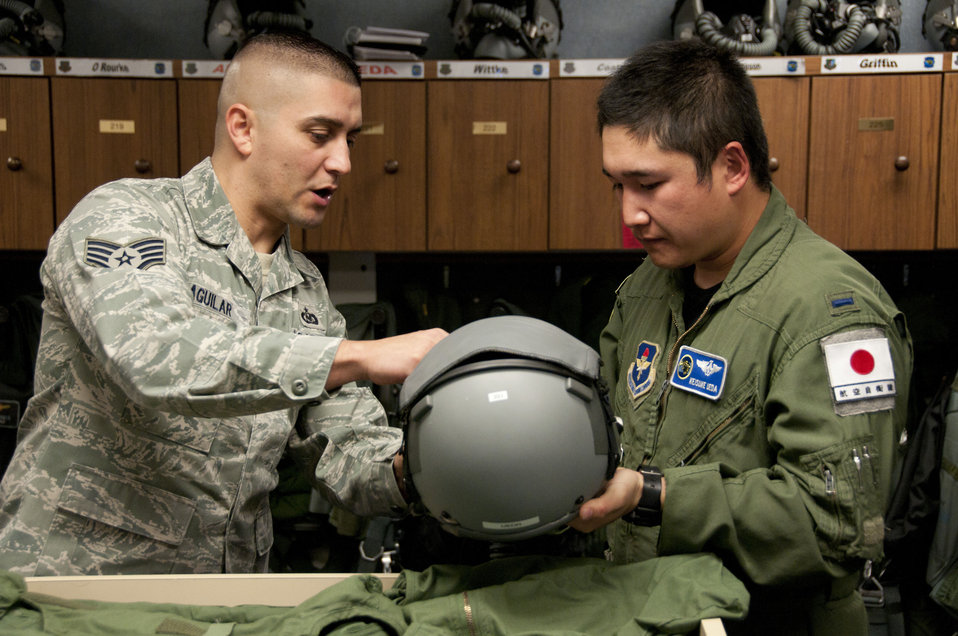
Arizona, Japanese Partnership

Japan Air Self-Defense Force 1st Lt. Keisuke Ueda pre-flights his helmet
with the help of Staff Sgt. Luis Aguilar, an aircrew flight equipment
specialist at the 162nd Fighter Wing at Tucson International Airport, Feb.
22. Ueda is one of three Japanese students currently enrolled in F-16
initial pilot training here.